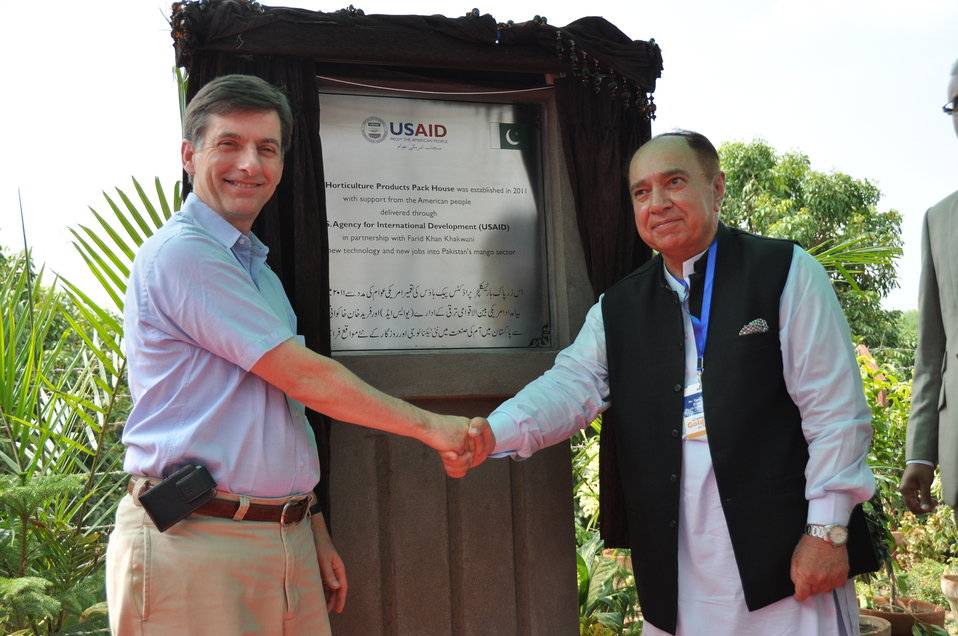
Zarpak Mango Farm